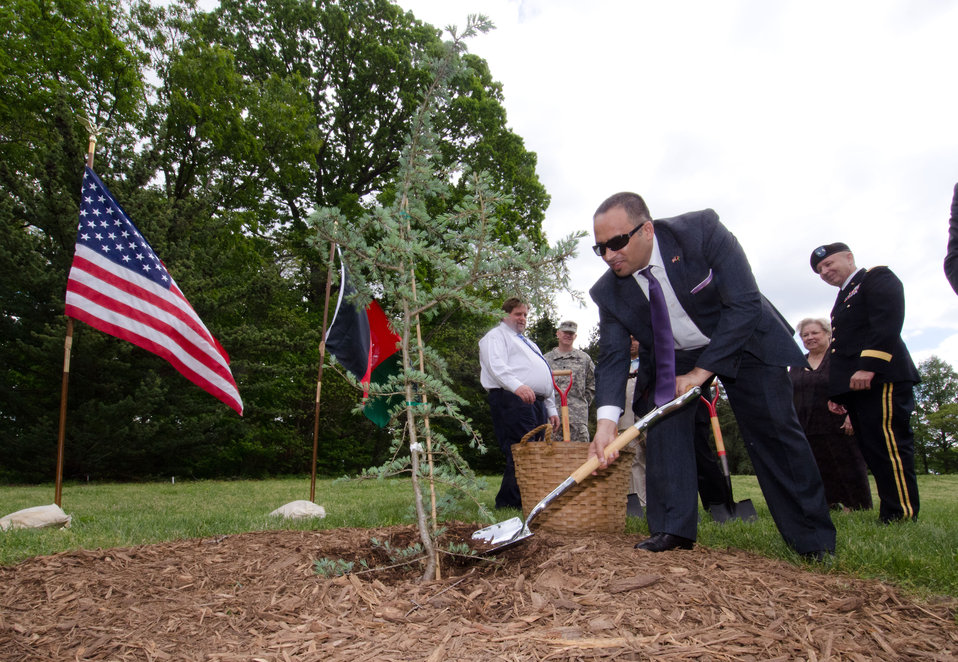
First Secretary for Economic Affairs, Afghan Embassy Qadier Nur added the final shovel of mulch during the Arbor Day tree planting of a Cedrus deodara ('Karl Fuchs') at the U.S. National Arboretum, on Friday, April 29, 2011 in Washington, DC.